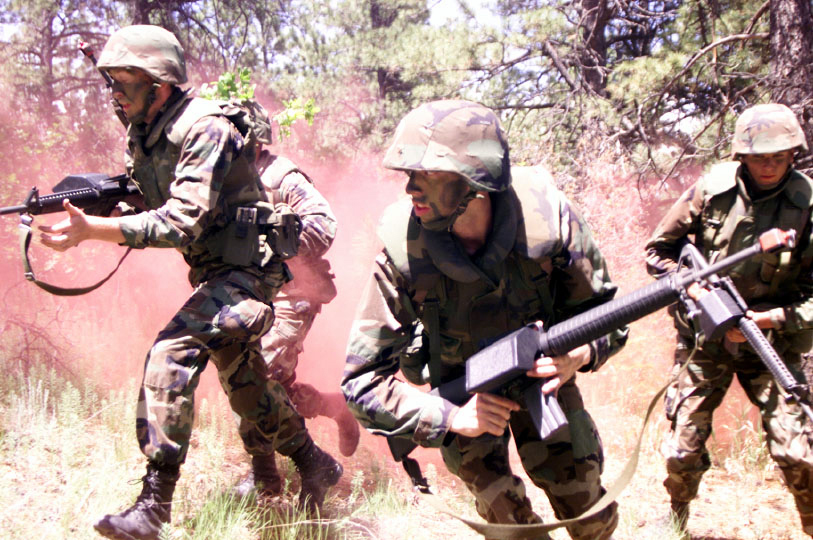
Attack

U.S. AIR FORCE ACADEMY, Colo. -- While searching for a downed aircraft, cadets use smoke to mask their assault on an enemy position, during the Global Engagement cadet exercise.